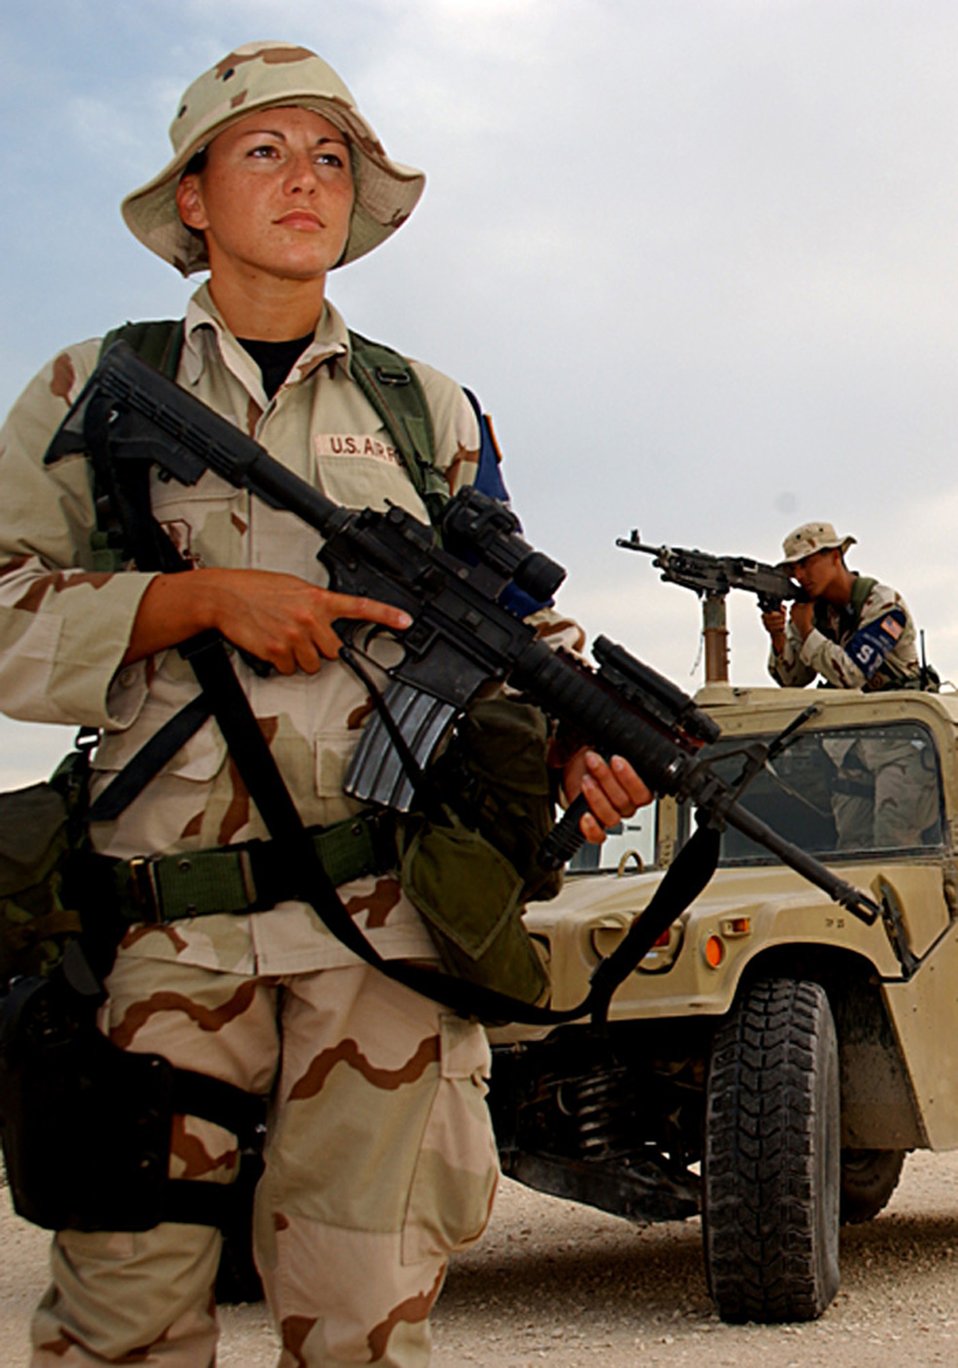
Security

SOUTHWEST ASIA (AFPN) -- Airman 1st Class Carin Brigham stands ready to ensure base perimeter security here. Airman 1st Class Erick Martinez backs her up with a M240 machine gun. Both Airmen are in the 379th Expeditionary Security Forces Squadron. The security forces career is undergoing a transformation that will affect the total force. These changes will present the opportunity for other Airmen to participate in installation security.